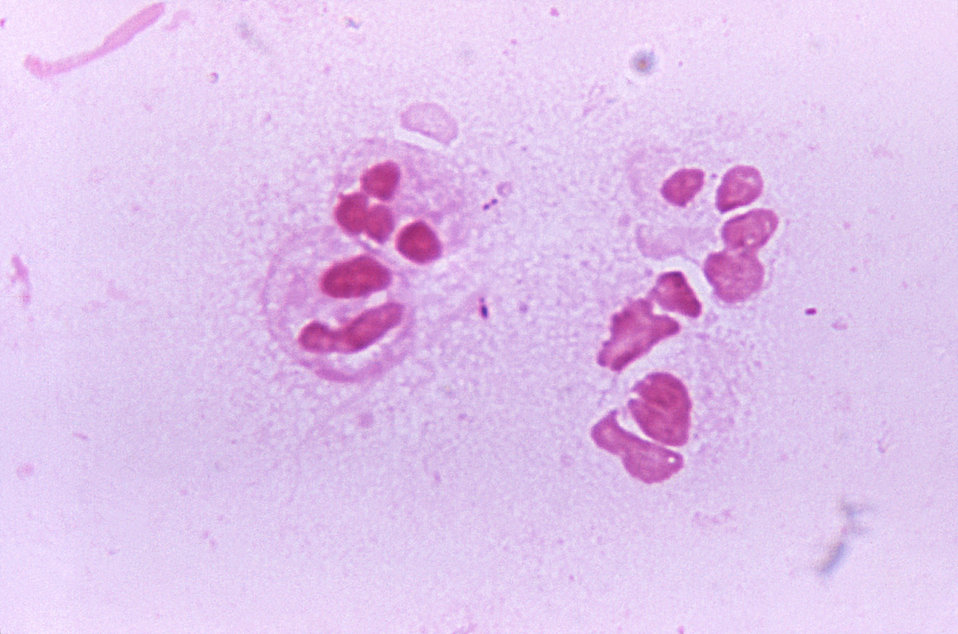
A photomicrograph of a urethral exudate from a patient with "nonspecific" urethritis; Magnified 1125X.